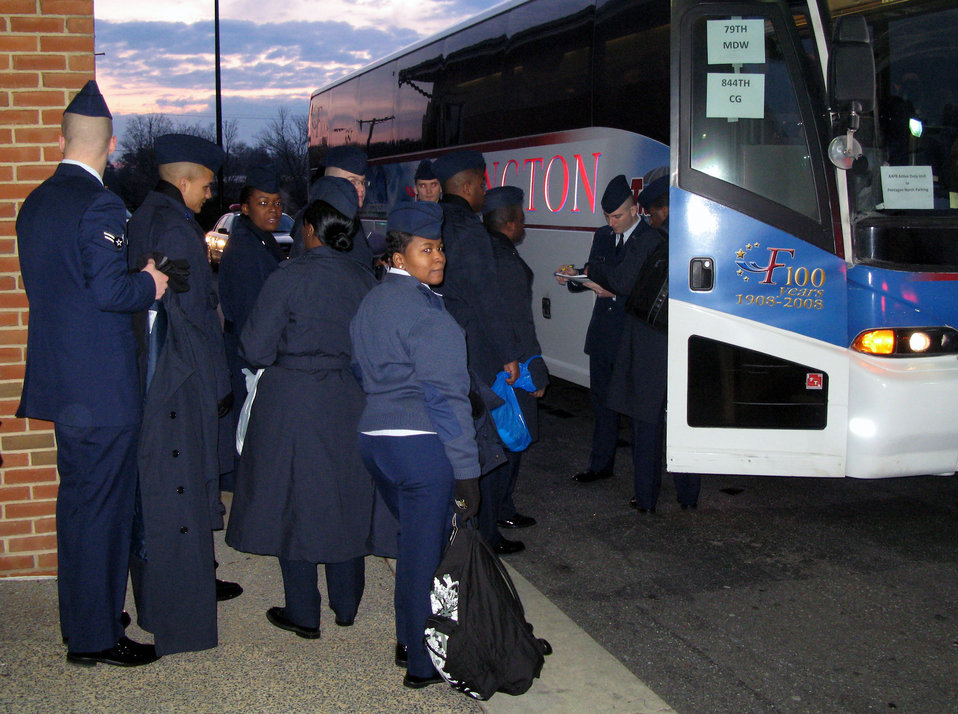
Airmen kick off inauguration day preparing for parade

Airmen from Andrews Air Force Base, Md., board a bus en route to Washington, D.C., to march in the Jan. 20 inauguration day parade.